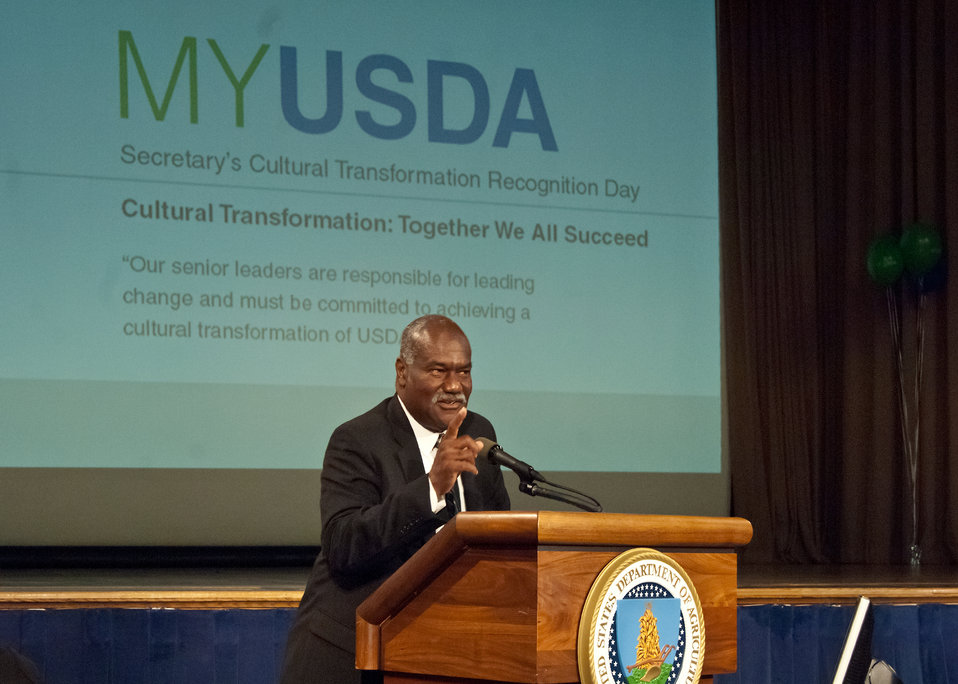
Pearlie Reed, Assistant Secretary for Administration addresses U.S. Department of Agriculture employees during the Cultural Transformation Recognition Ceremony at the Jefferson Auditorium, US Department of Agriculture in Washington, DC, on Tuesday, October 4, 2011. Cultural Transformation is the process of creating a workplace where all employees and customers are treated with dignity, respect and the opportunity for success. Recognizing the important contributions of all employees to the operation of the United States Department of Agriculture. The goal of cultural transformation is to get everyone at USDA – from the Under Secretaries to employees at every grade level, in every location - to ensure USDA is a place where there’s opportunity for all to reach their full potential. Only then can USDA provide its customers with exceptional service in an equitable manner.